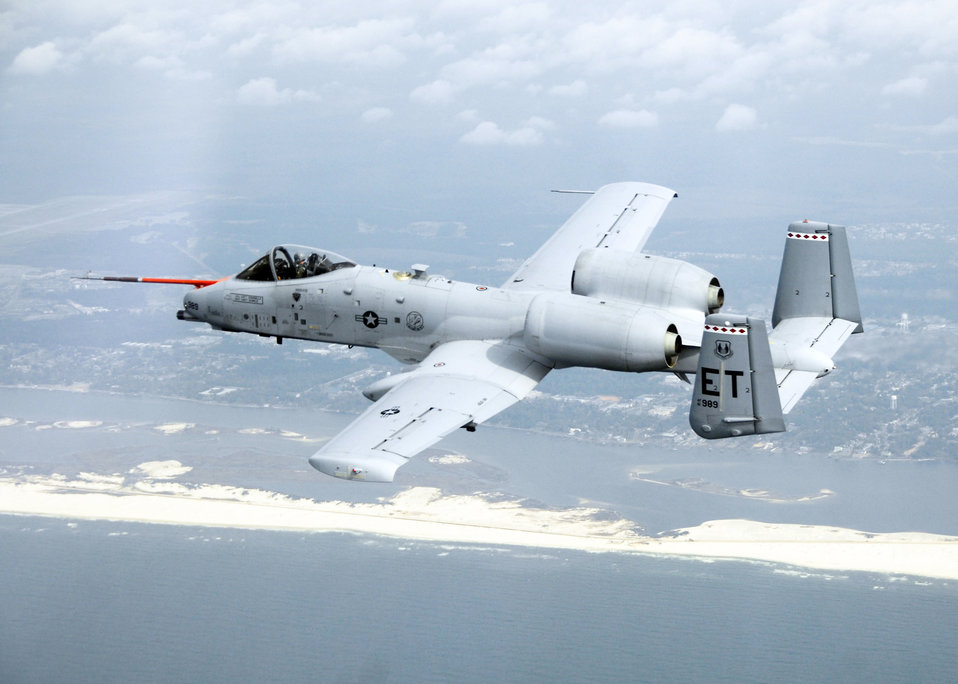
Biofuel flight

An A-10C Thunderbolt II from Eglin Air Force Base, Fla., flies along the coast of Florida March 25, 2010, during the first flight of an aircraft powered solely by a biomass-derived jet fuel blend. The A-10 was fueled with a 50/50 blend of Hydrotreated Renewable Jet and JP-8.